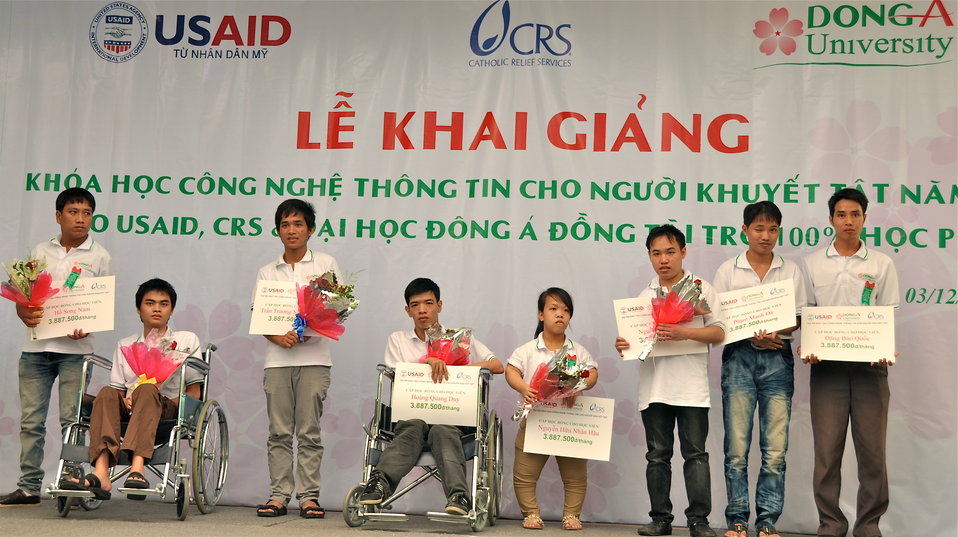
New class of students starts at Dong A Univeristiy with support from USAID and CRS

Photo: @USAIDVietnam
December 3, 2012